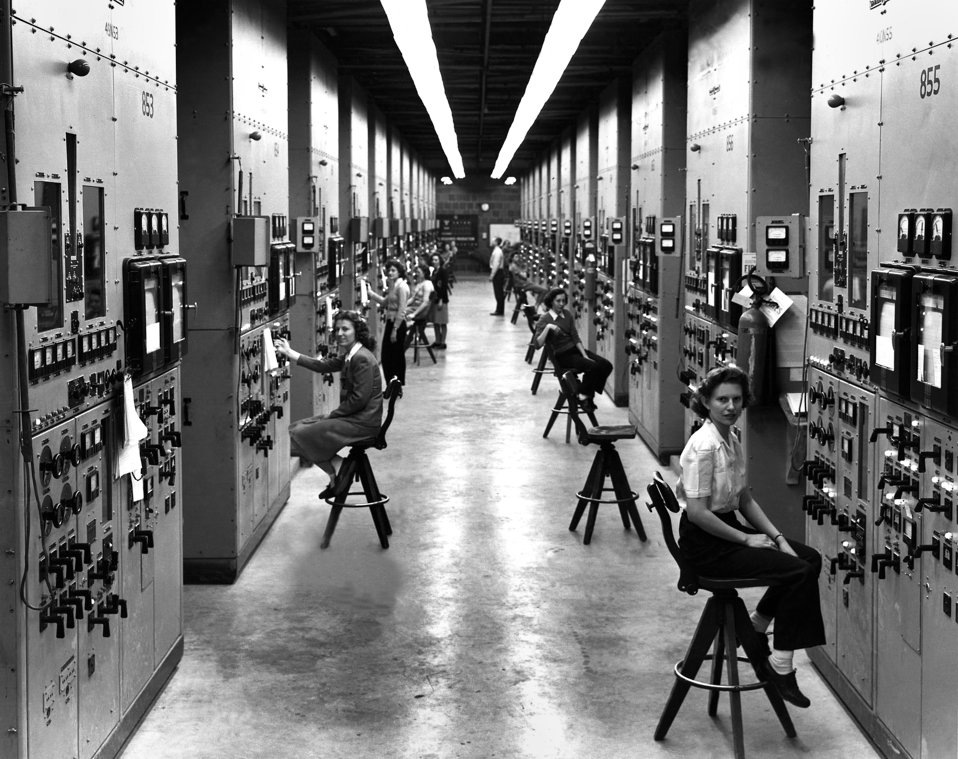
' The Calutron Girls' Y-12 Oak Ridge 1944

Y-12-142 DOE photo Ed Westcott 1944 Oak Ridge Tennessee